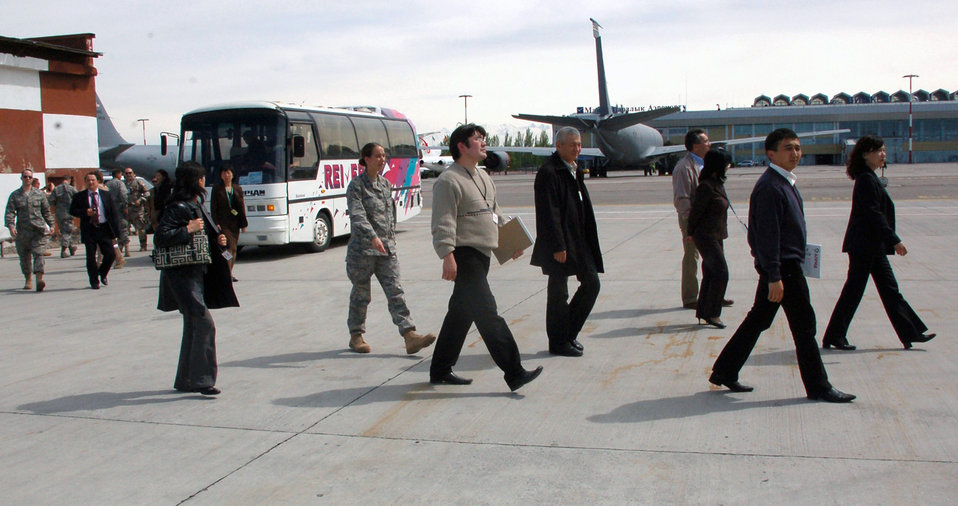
Med group holds symposium

Guests attending a coalition medical symposium recently had the opportunity to tour the 376th Air Expeditionary Wing flightline at Manas Air Base, Kyrgyzstan. Guests attending the symposium were from the Spanish coalition medical staff, U.S. Embassy medical unit, Peace Corps medical staff and the Bishkek Research Center of Trauma and Orthopedics.